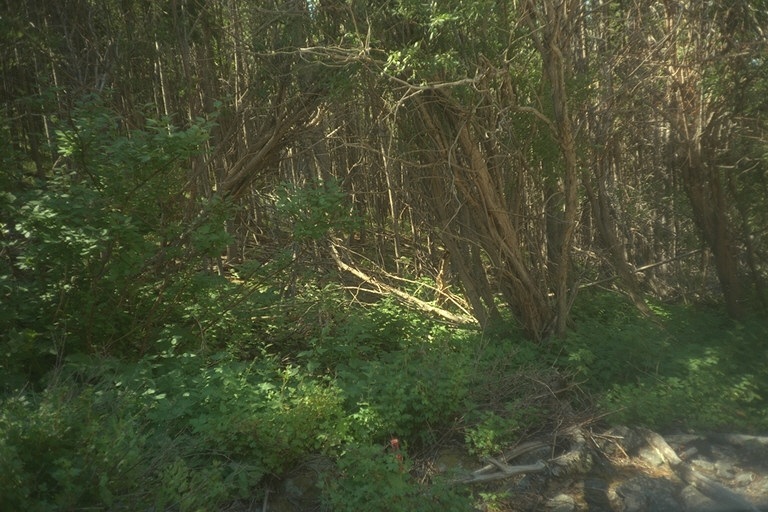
Riparian area Public Lands Salmon Field Office UCSC Upper Columbia Salmon Clearwater District